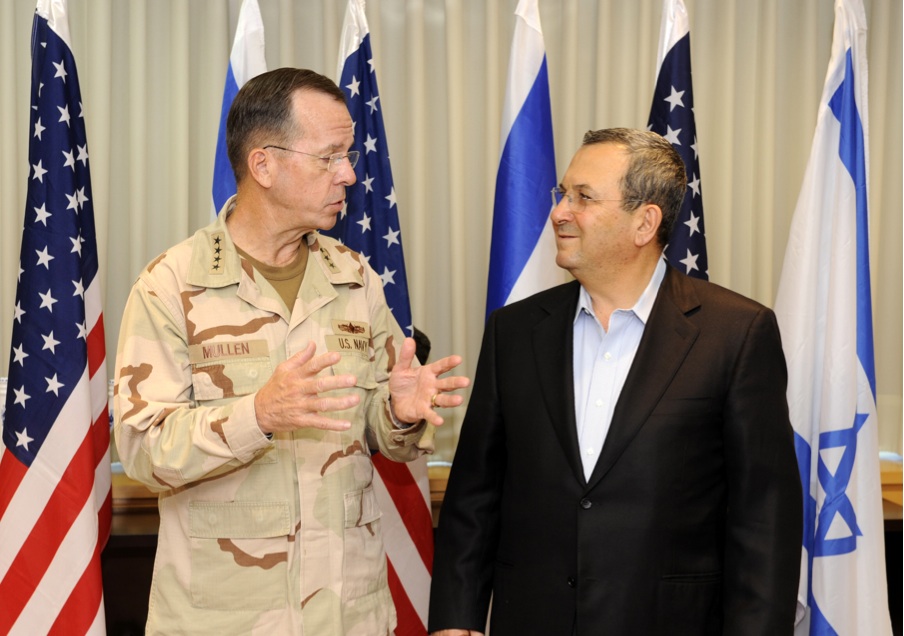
Admiral Mullen Speaks With Israeli Defense Minister Barak

Chairman of the Joint Chiefs of Staff Admiral Michael G. Mullen speaks with Israeli Defense Minister Ehud Barak before their meeting at the U.S. Embassy Tel Aviv in Israel on June 27, 2010.